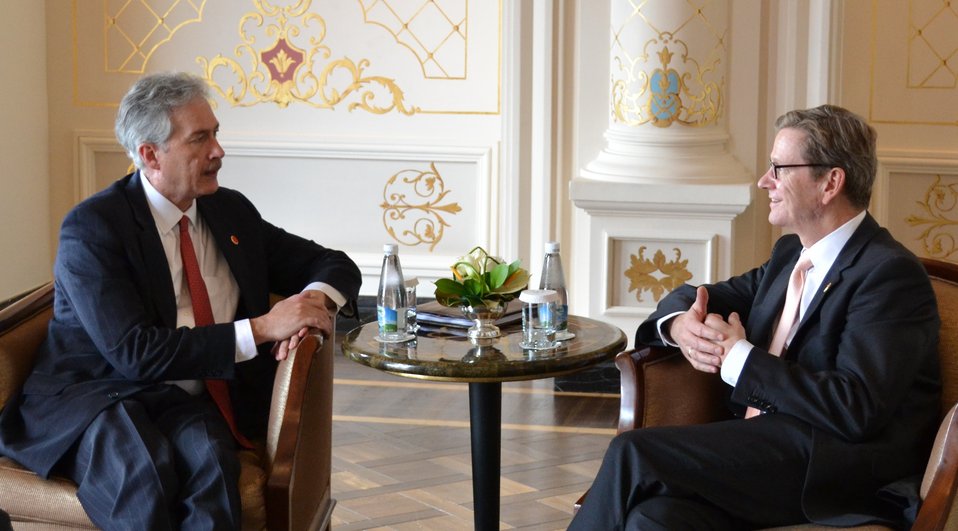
Deputy Secretary Burns Meets With German Foreign Minister Westerwelle

U.S. Deputy Secretary of State William J. Burns meets with German Foreign Minister Guido Westerwelle during the Istanbul Conference for Afghanistan at the Ciragan Palace in Istanbul, Turkey, on November 1, 2011.